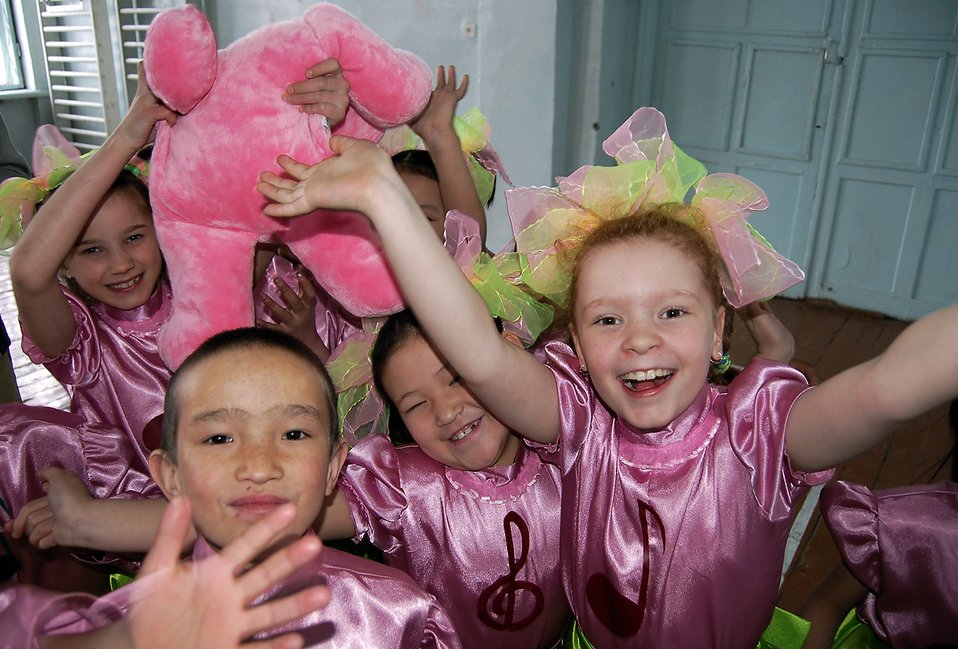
?Live Round,? helps bring gifts; music to school for the deaf

Bishkek Boarding School for the Deaf children show their appreciation for the toys and U.S. Central Command Air Forces Band Live Round?s musical performance.